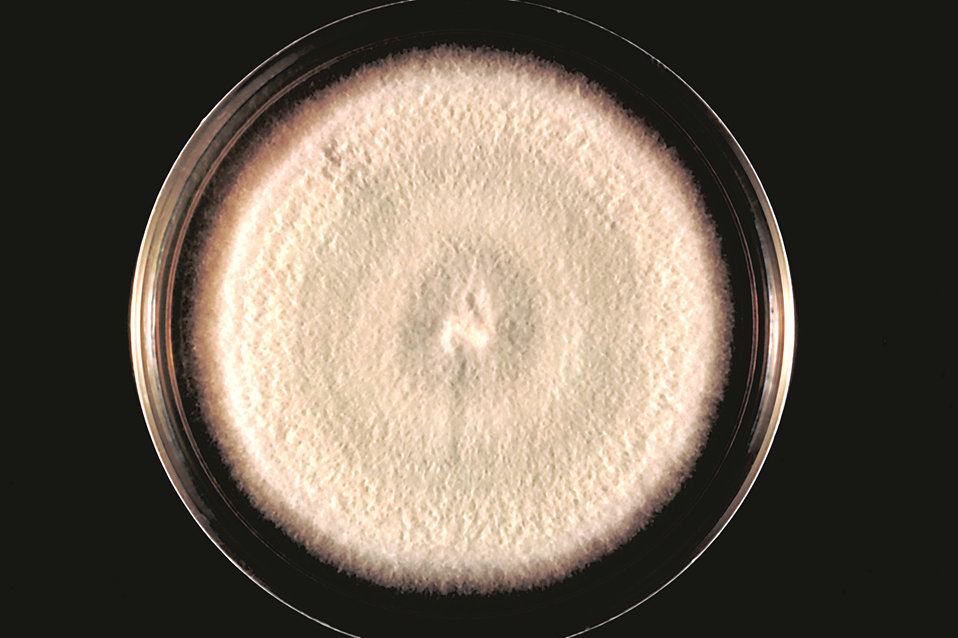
This image depicts a plate culture with a colony of the fungus Acremonium falciforme.